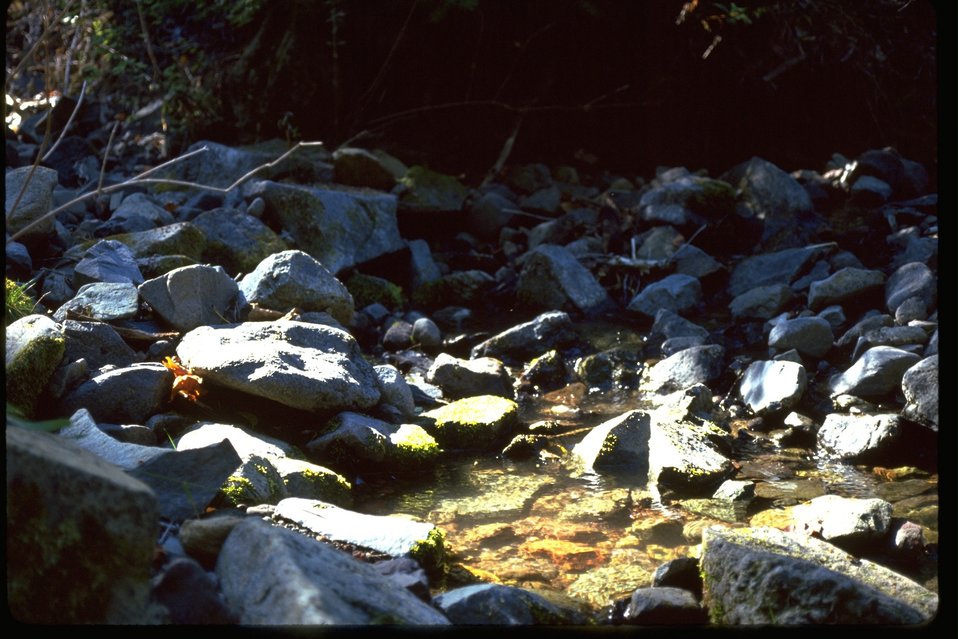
Scotch Creek RNA, confluence, West Fork Scotch Creek.